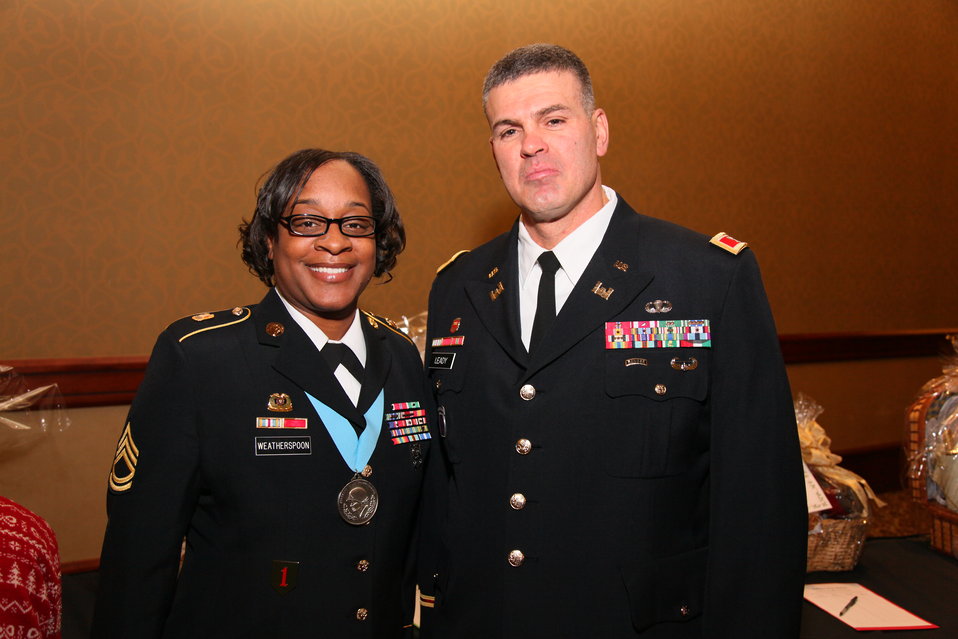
Sacramento District Holiday Party 2011